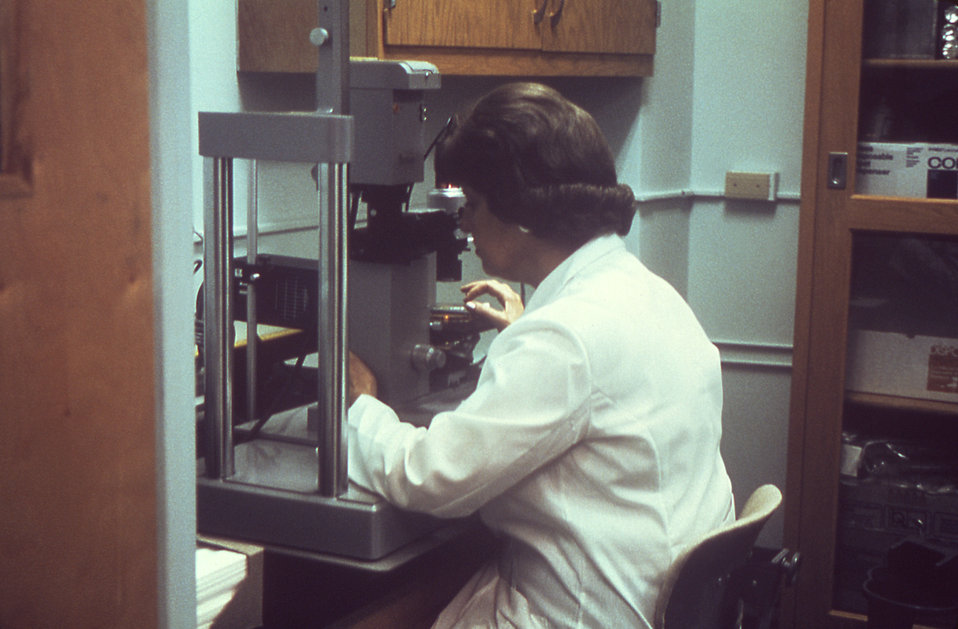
This laboratorian is checking the dilution of an amniotic fluid cell culture using an inverted scope.